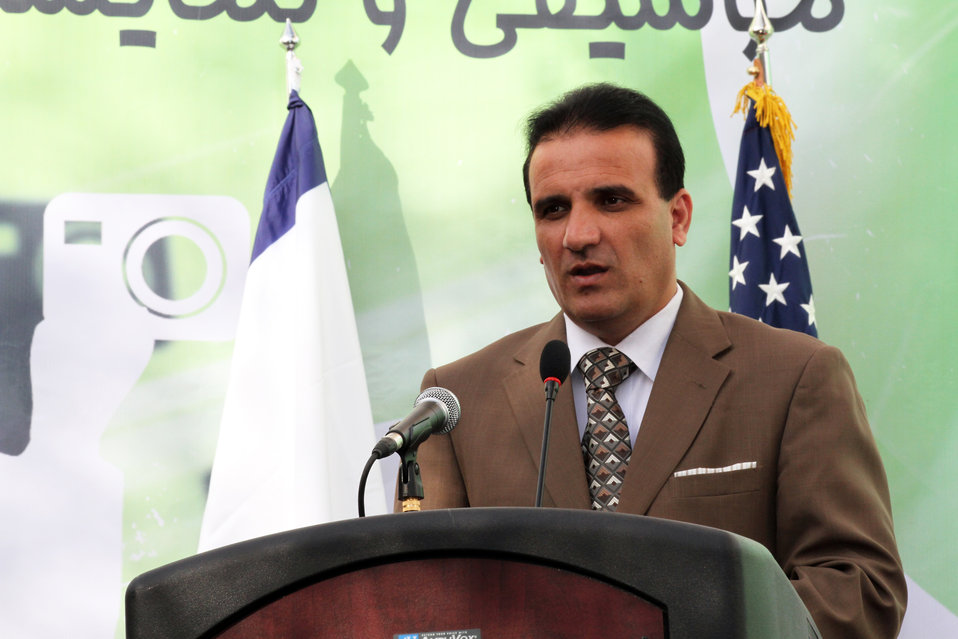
Afghan Youth Festival

Internews - USAID